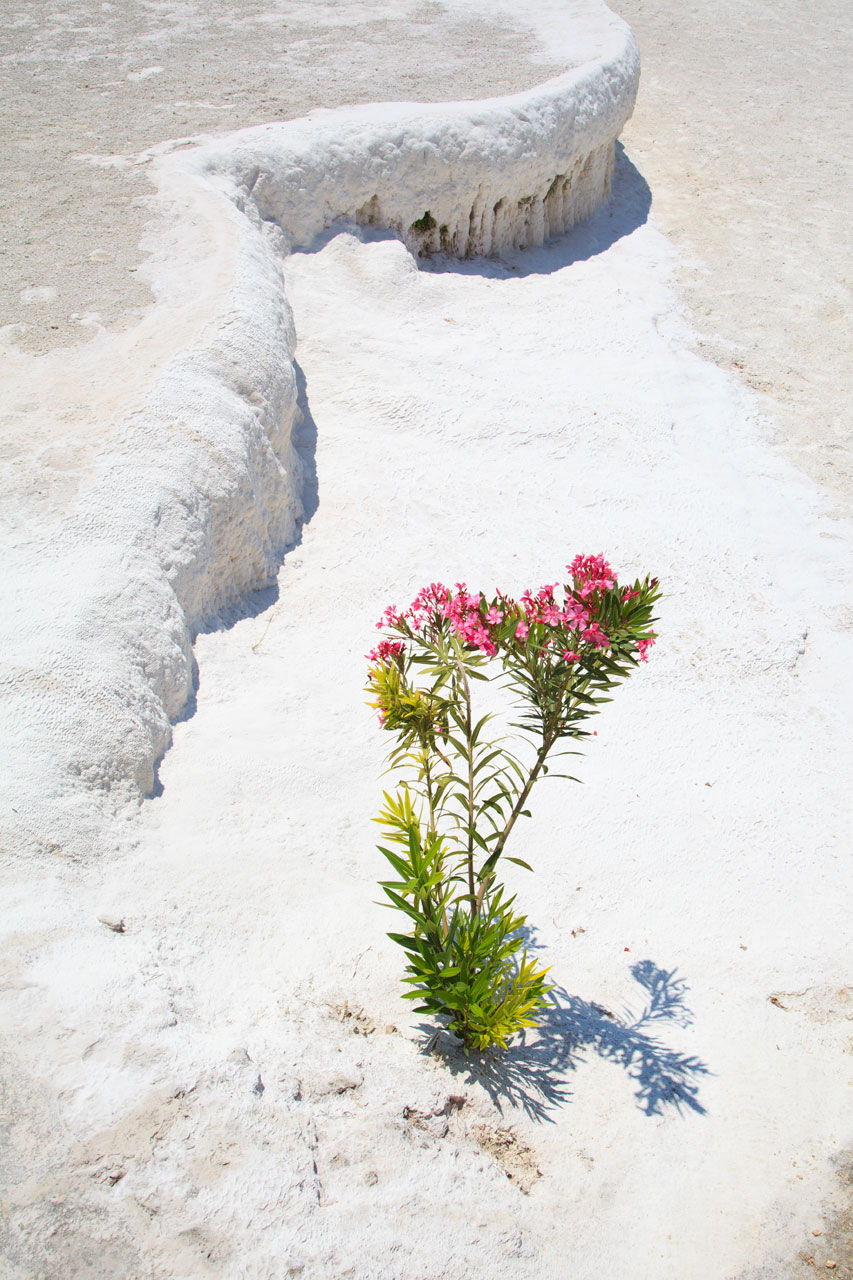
Plant growing in desert

Blooming plant growing in dry desert.